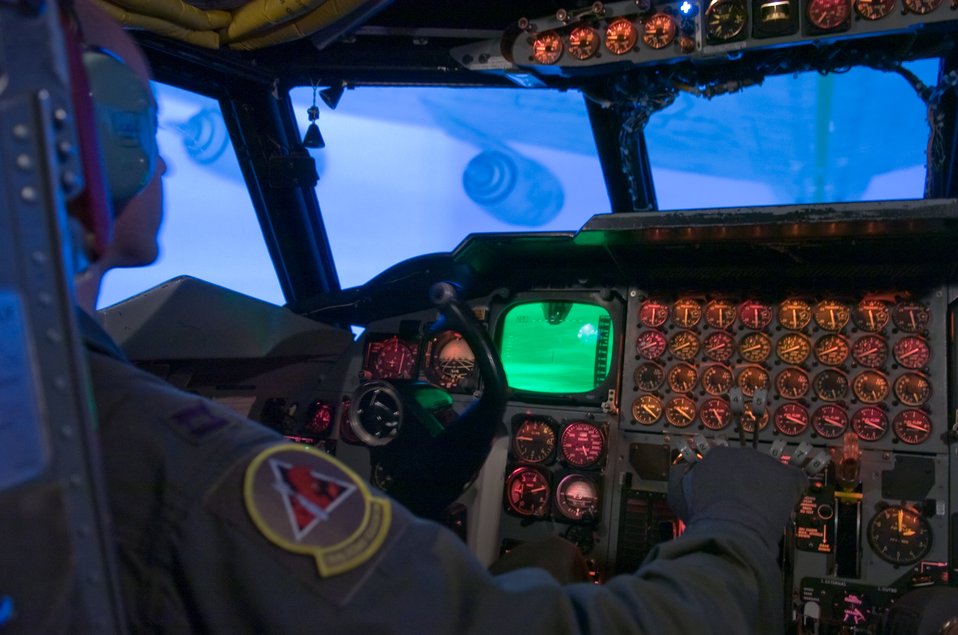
B-52 bomber and simulator

Capt. Joseph Babboni trains on a B-52 Stratofortress simulator April 28 at Barksdale Air Force Base, La. to improve his proficiency at air refueling. An actual flight in a B-52 bomber costs approximately $16,000 per hour. The flight simulator costs approximately $400 per hour to operate. Despite the cost savings, not all training can be a conducted in a simulator. Capt. Babboni is a pilot with the 11th Bomb Squadron.